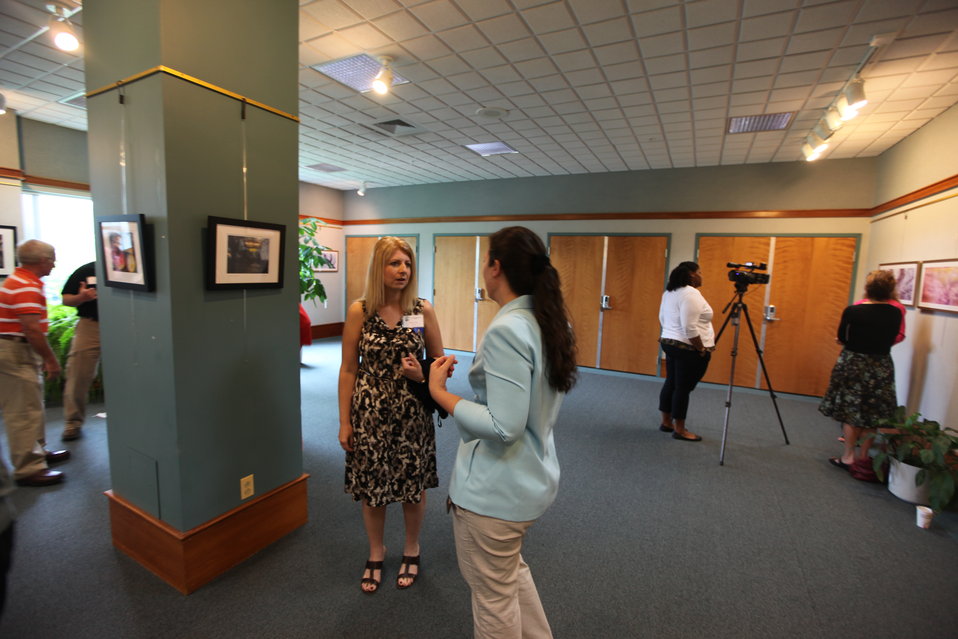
Northeast Region Employee Appreciation Awards

Award recipients arriving.